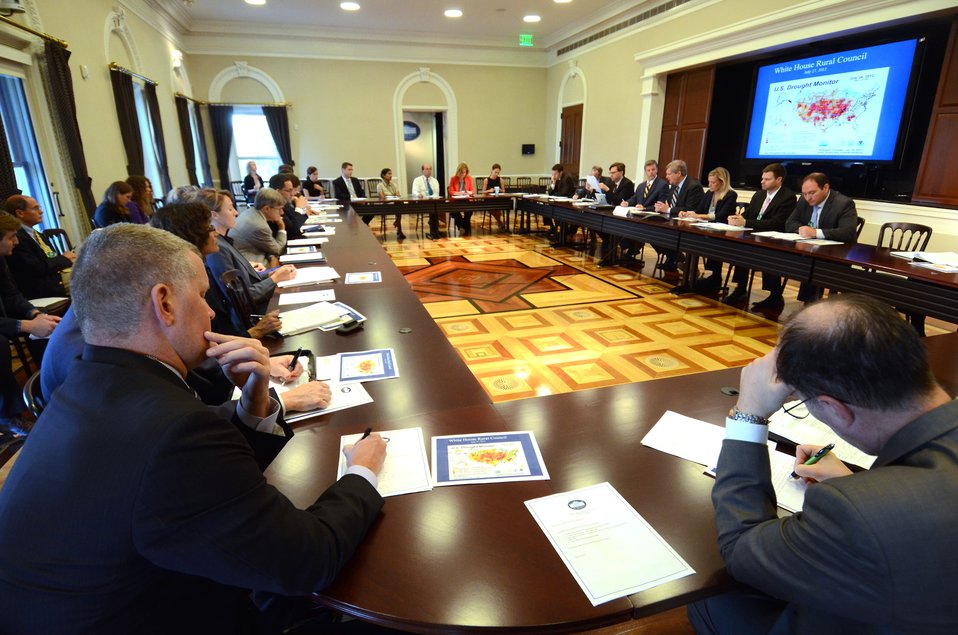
Agriculture Secretary Tom Vilsack chaired a meeting of the White House Rural Council at the Executive Office Building in Washington, D.C. on Friday, July 27, 2012 to update members and stakeholders on the Administration response to the drought and explore ways to assist American farmers and ranchers suffering in its affects.